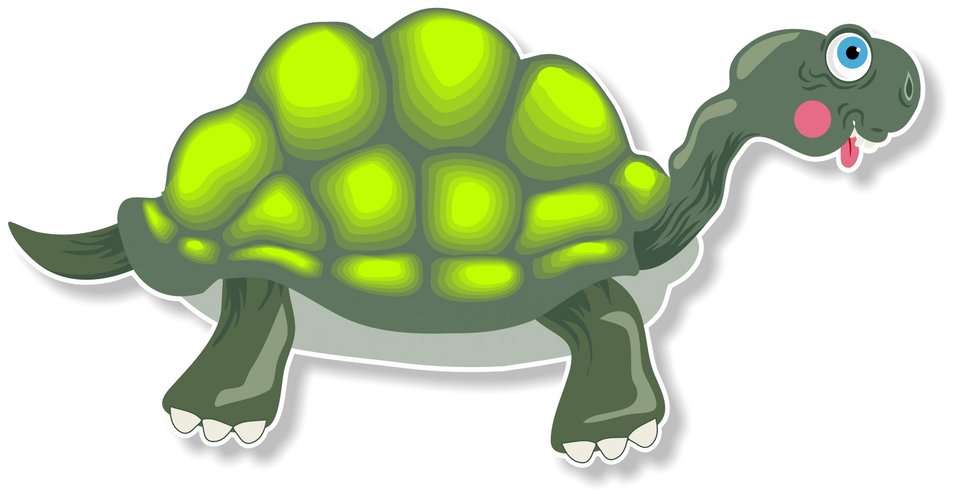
Cartoon tortoise clipart

Cute illustration of a cartoon tortoise..